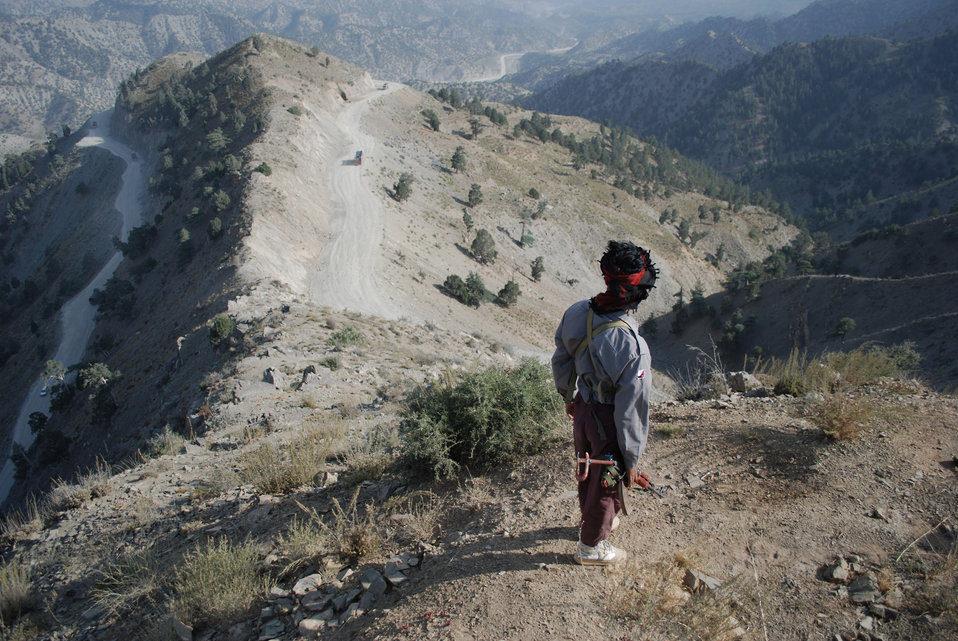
'On the Road' in Paktya Province